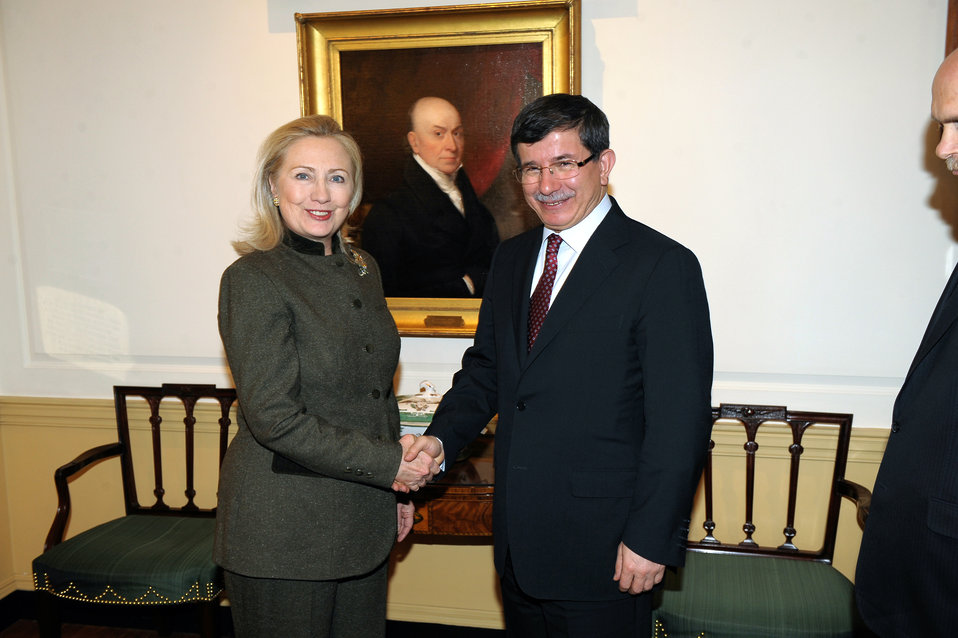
Secretary Clinton Meets With Foreign Minister Davutoglu of Turkey

U.S. Secretary of State Hillary Rodham Clinton meets with Turkish Foreign Minister Ahmet Davutoglu at the U.S. Department of State in Washington, D.C., on February 13, 2012.